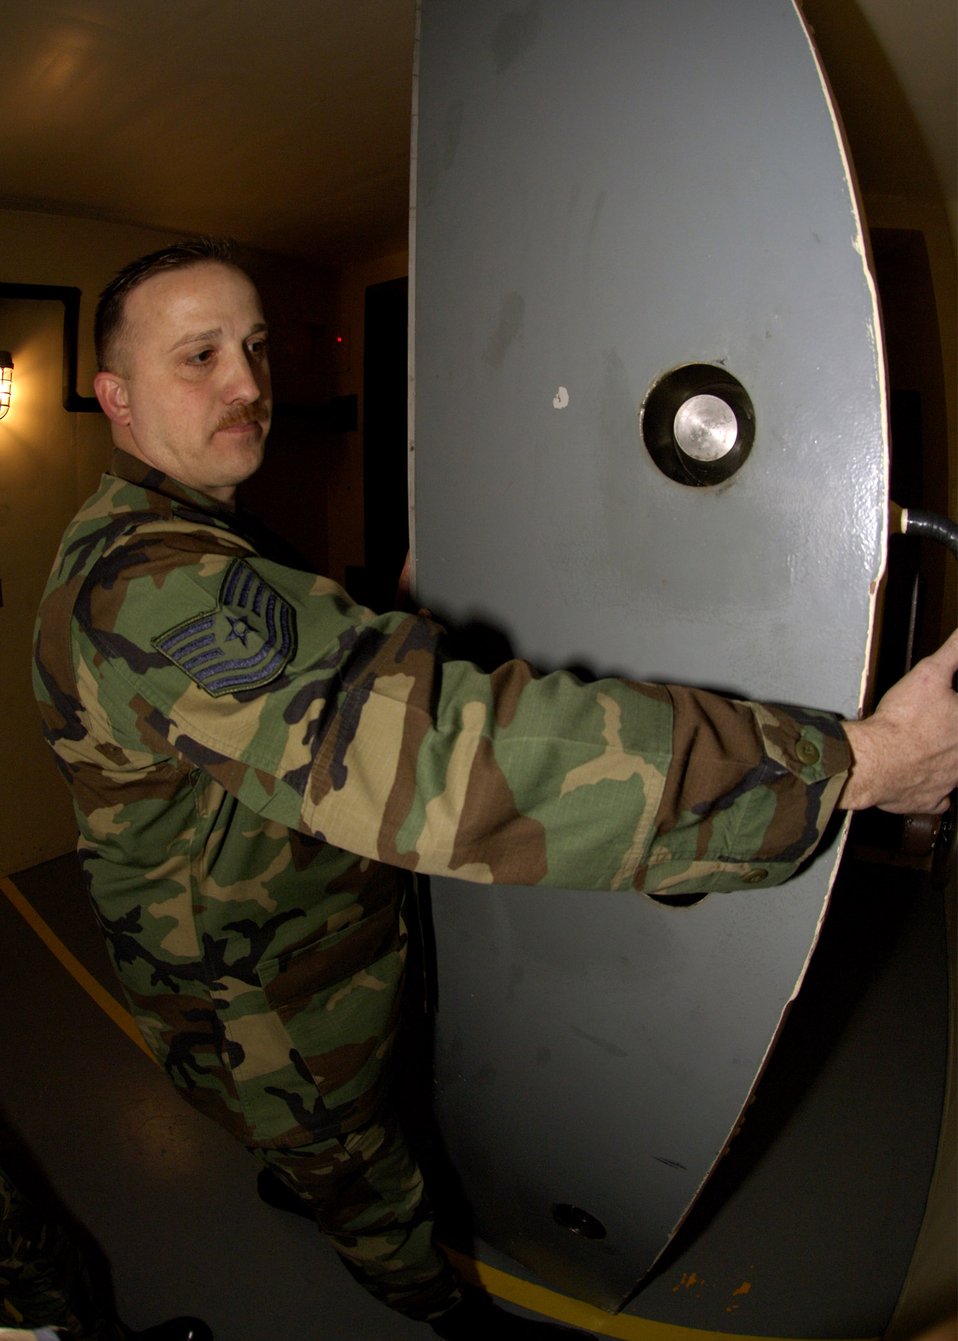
Launch Control

Tech. Sgt. Paul Bobenmoyer, a facility manager at Alpha-1 Missile Alert Facility, opens the blast door of the underground passageway that leads to the launch control center and the launch control equipment building Feb. 7. Sergeant Bobenmoyer is assigned to the 319th Missile Squadron at F.E. Warren Air Force Base, Wyo.